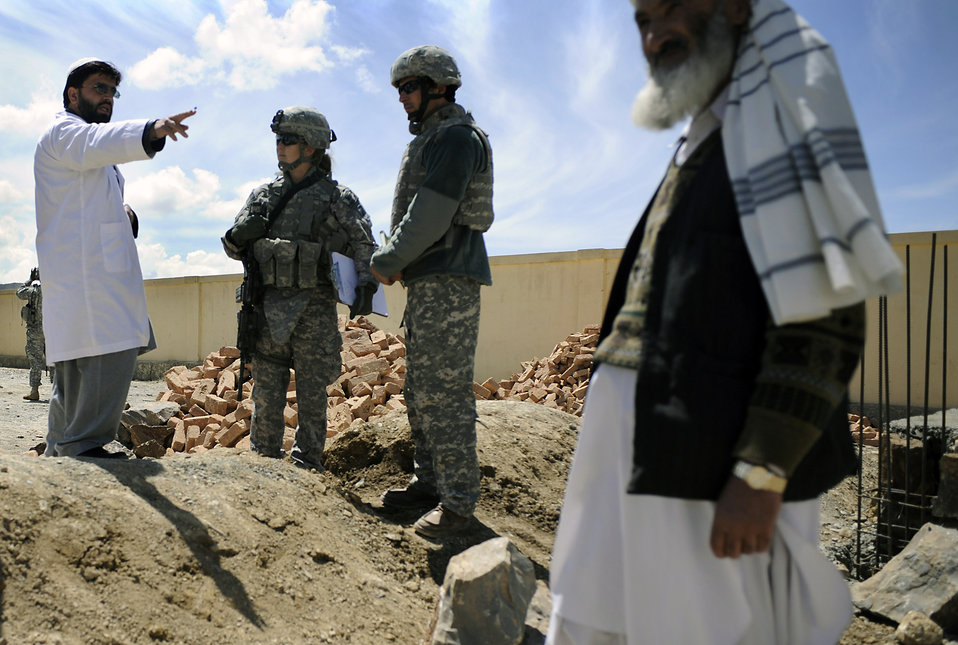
Providing reconstructive assistance, hope to Afghan homeland

Maj. Kimberly Riggs speaks with the director of the Sayed Karam Female Medical Providers Quarters about current construction projects intended to improve the facility's ability to house female doctors and midwives April 13 in Gardez City, Afghanistan. Major Riggs is the engineer officer in charge of the Paktya Provincial Reconstruction Team.